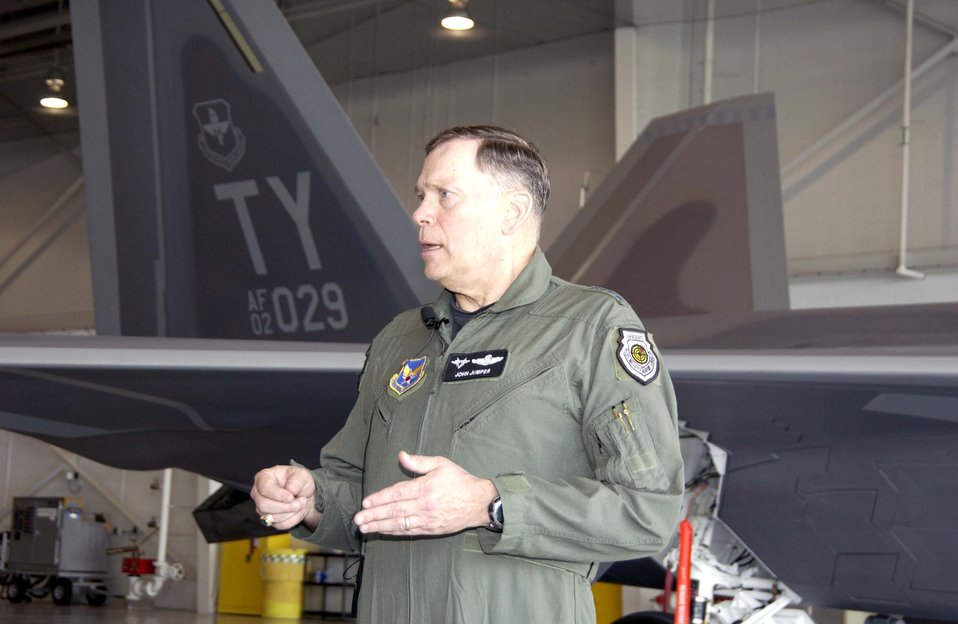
General Jumper qualifies in F/A-22 Raptor

TYNDALL AIR FORCE BASE, Fla. -- After his F/A-22 Raptor qualification flight here, Air Force Chief of Staff Gen. John P. Jumper answers questions during a press conference.